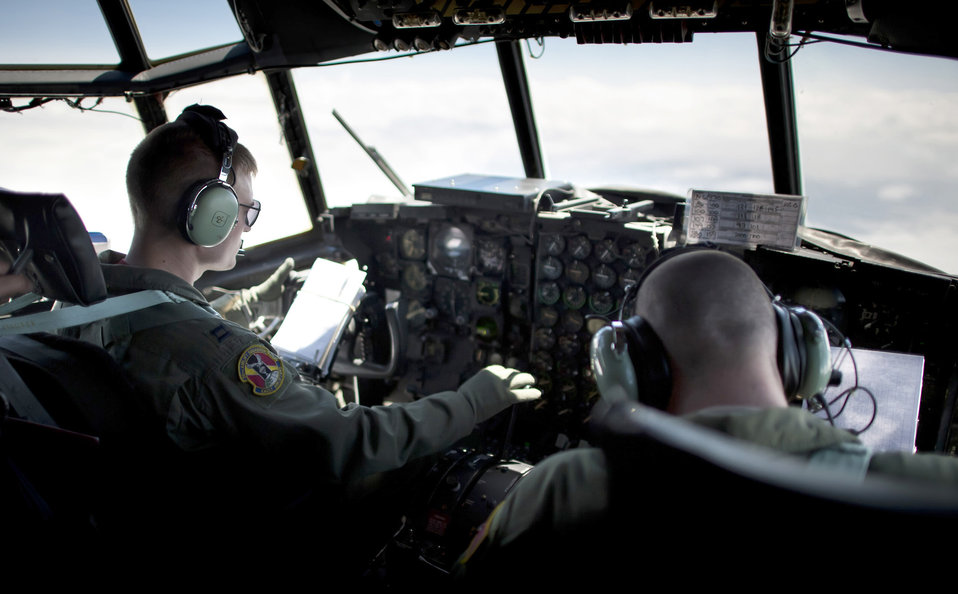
Monitoring ocean currents

Capt. Gabe Frusha brings a C-130 Hercules back to cruising altitude after loadmasters dropped seven buoys into the Pacific Ocean April 29, 2011. Captain Frusha is a pilot assigned to the 36th Airlift Squadron at Yokota Air Base, Japan.